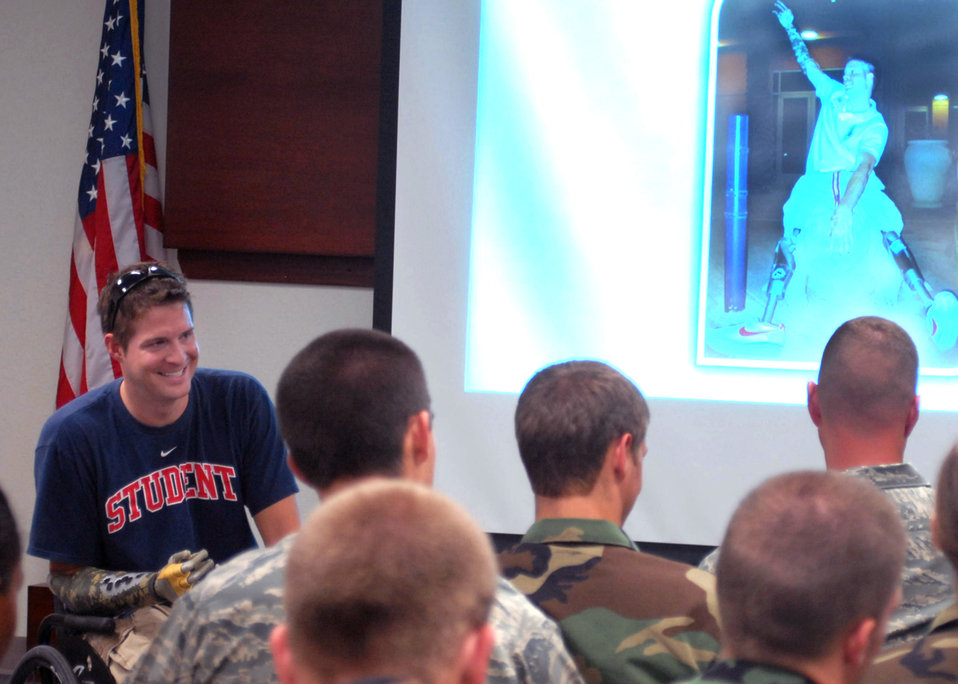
Goodfellow veteran relives experience for Airmen

Brian Kolfage Jr. speaks to an audience that included 17th Security Forces Squadron defenders and ROTC cadets July 2 at Goofellow Air Force Base, Texas. He spoke about a rocket attack in Iraq on Sept. 11, 2004, which left him without legs and a right arm. Mr. Kolfage is a former 17th Security Forces Squadron defender and now a retired senior airman.